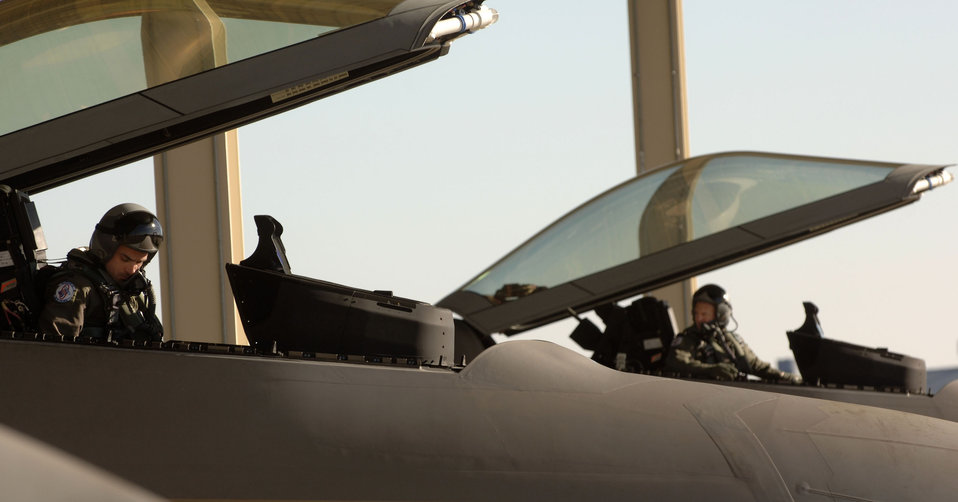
Raptors head to Red Flag

Lt. Col. Dirk Smith (far right) and Capt. Merrick Baroni begin start up procedures in their respective F-22 Raptors Feb. 3 at Langley Air Force Base in Virginia.The 94th Fighter Squadron is deploying for Red Flag at Nellis AFB, Nev. Red Flag is an air combat training exercise designed to test pilots and air support crews' ability to affectively respond to real-world combat scenarios. This is the first deployment to Red Flag for the 94th FS with F-22s. Colonel Smith is the 94th FS commander. Colonel Smith is the commander and Captain Baroni is a pilot with the 94th FS.